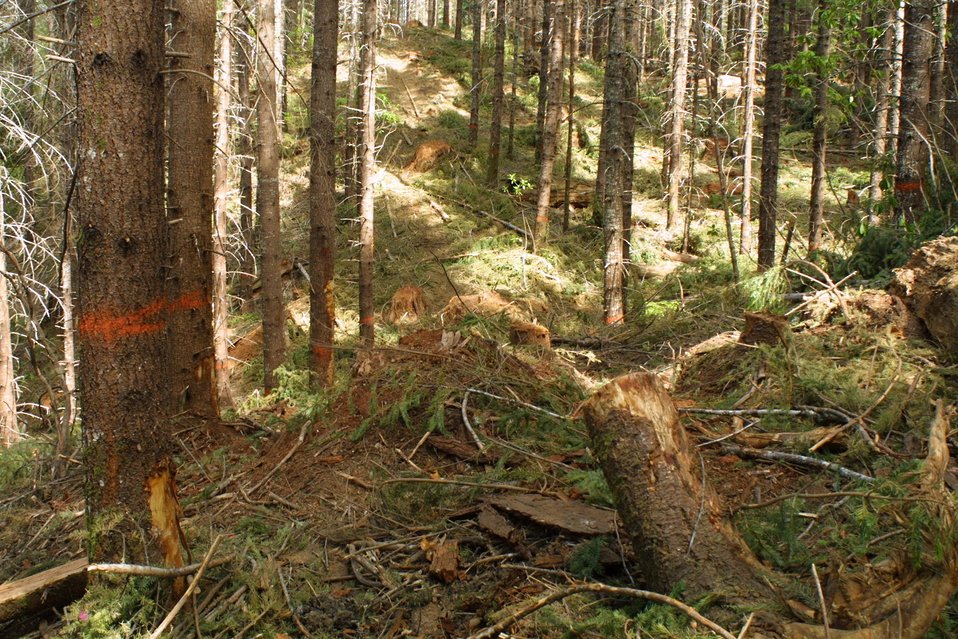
Camas East Timber Sale in Late Successional Reserve.